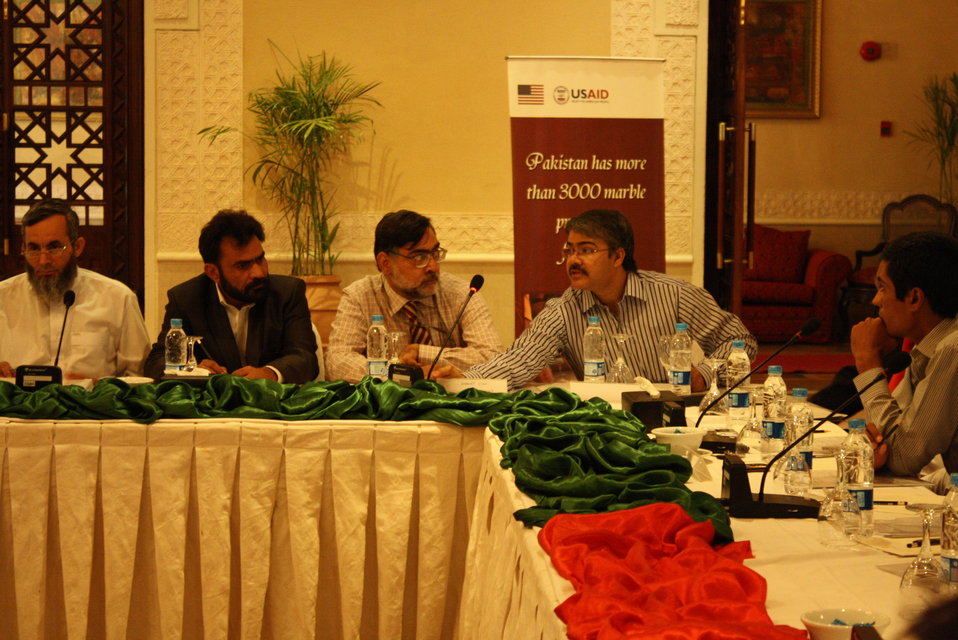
First Consultative Meeting with Marble and Granite Sector Stakeholders 6